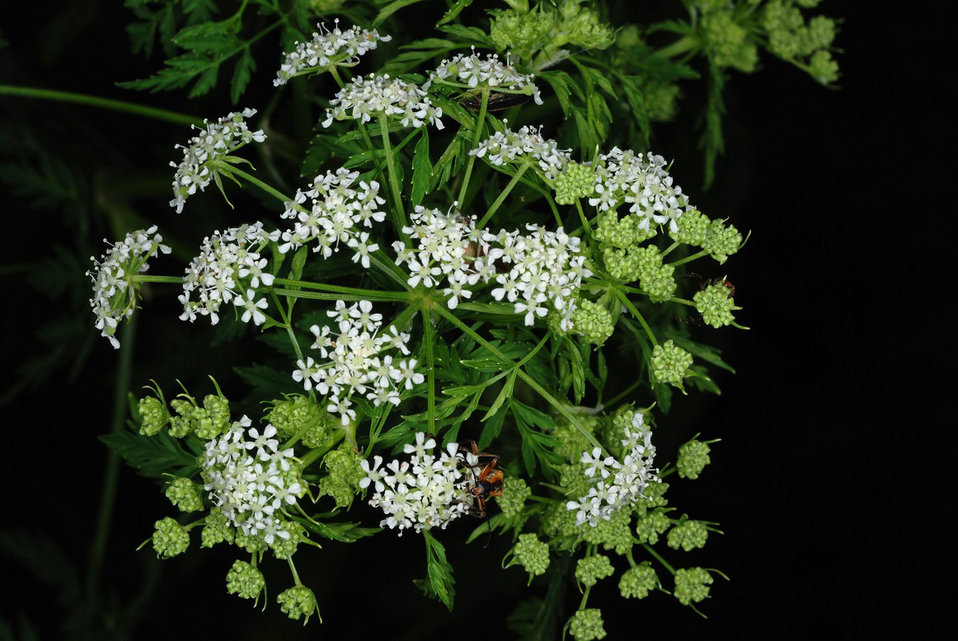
Conium Mac 1 (2)

Top-view of the flower structure of Conium maculatum, poison hemlock, Greensboro, North Carolina. Doug Goldman, USDA-NRCS-NPDT